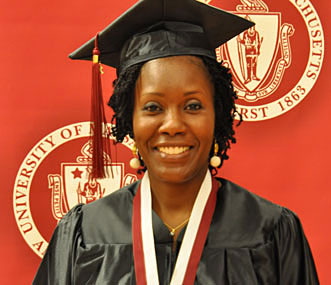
Charlean Malone, a human resource specialist, is an active member of the Air National Guard, and was deployed to Southeast Asia for six months in 2011. Malone graduated in May 2012 with a Bachelor of Arts degree in human resource development from the University of Massachusetts in Amherst.